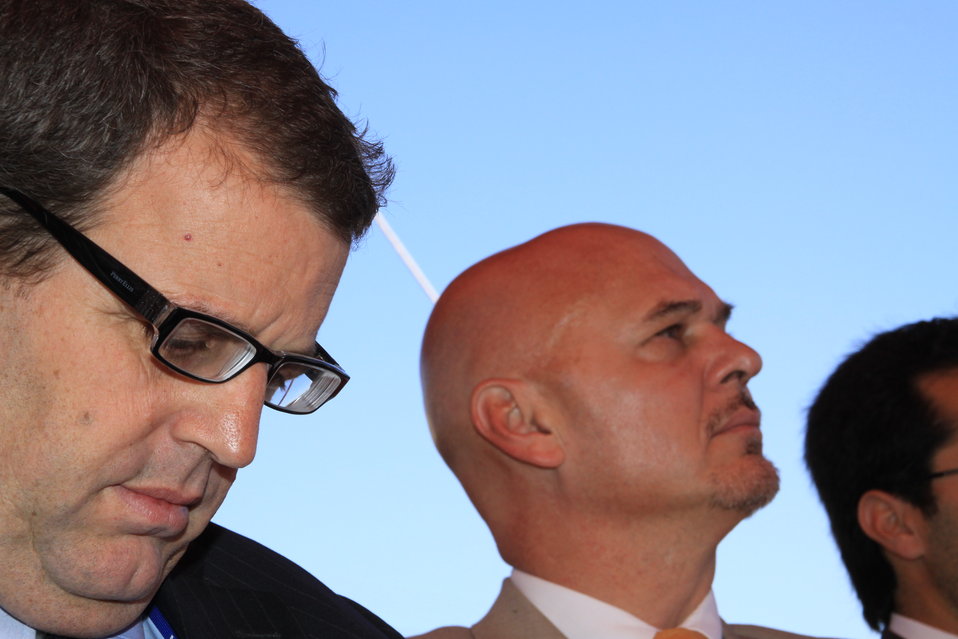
AVIPA Plus Wheat Seed Distribution 101005

US Ambassador Karl Eikenberry and USAID Acting Mission Director Kevin Brownawell joined the Minister of Agriculture, Irrigation and Livestock, H.E. Minister Mohammed Rahimi in signing a Memorandum of Understanding and distributing vouchers to area farmers for wheat and fertilizer.

US Ambassador Karl Eikenberry and USAID Acting Mission Director Kevin Brownawell joined the Minister of Agriculture, Irrigation and Livestock, H.E. Minister Mohammed Rahimi in signing a Memorandum of Understanding and distributing vouchers to area farmers for wheat and fertilizer.